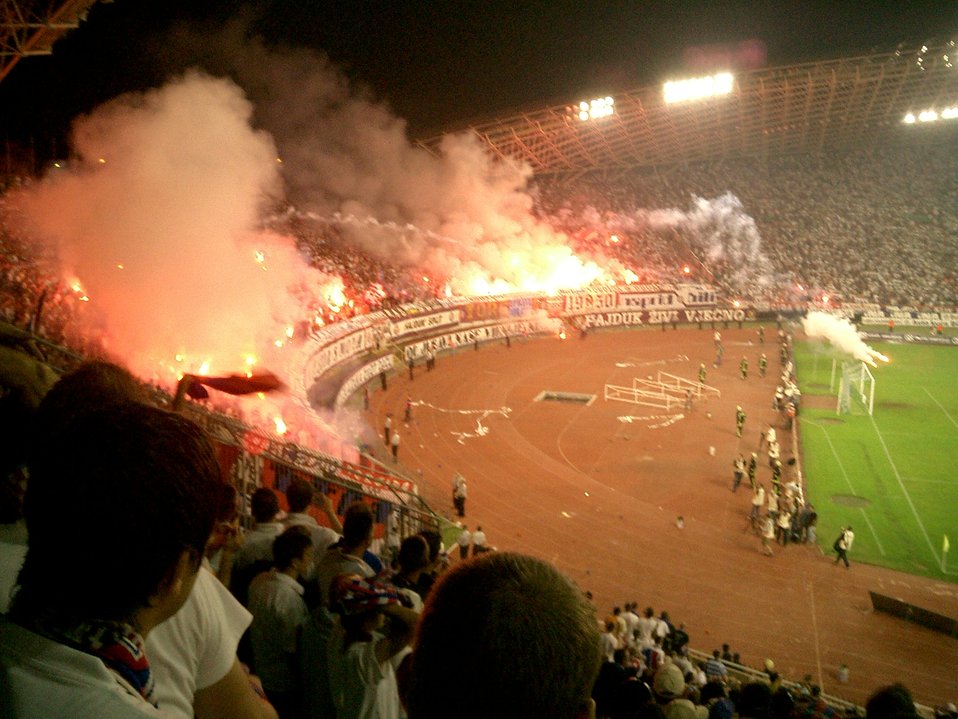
An image showing the north stand of Poljud Beauty with the greatest Torcida fans. Image taken during the biggest Croatian football derby between Hajduk Split and Dinamo Zagreb.